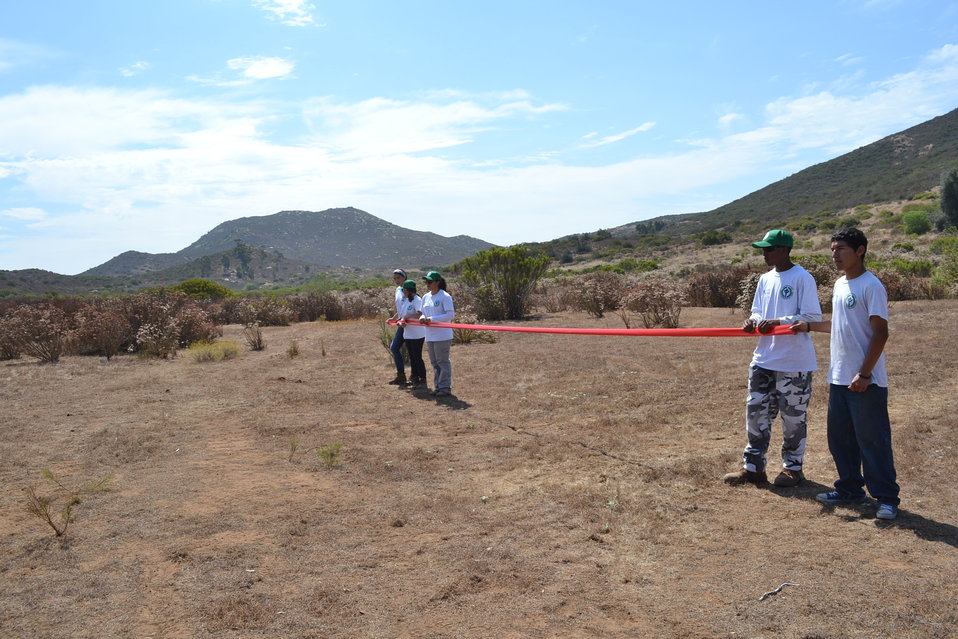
Hidden Valley Ribbon Cutting

(USFWS)